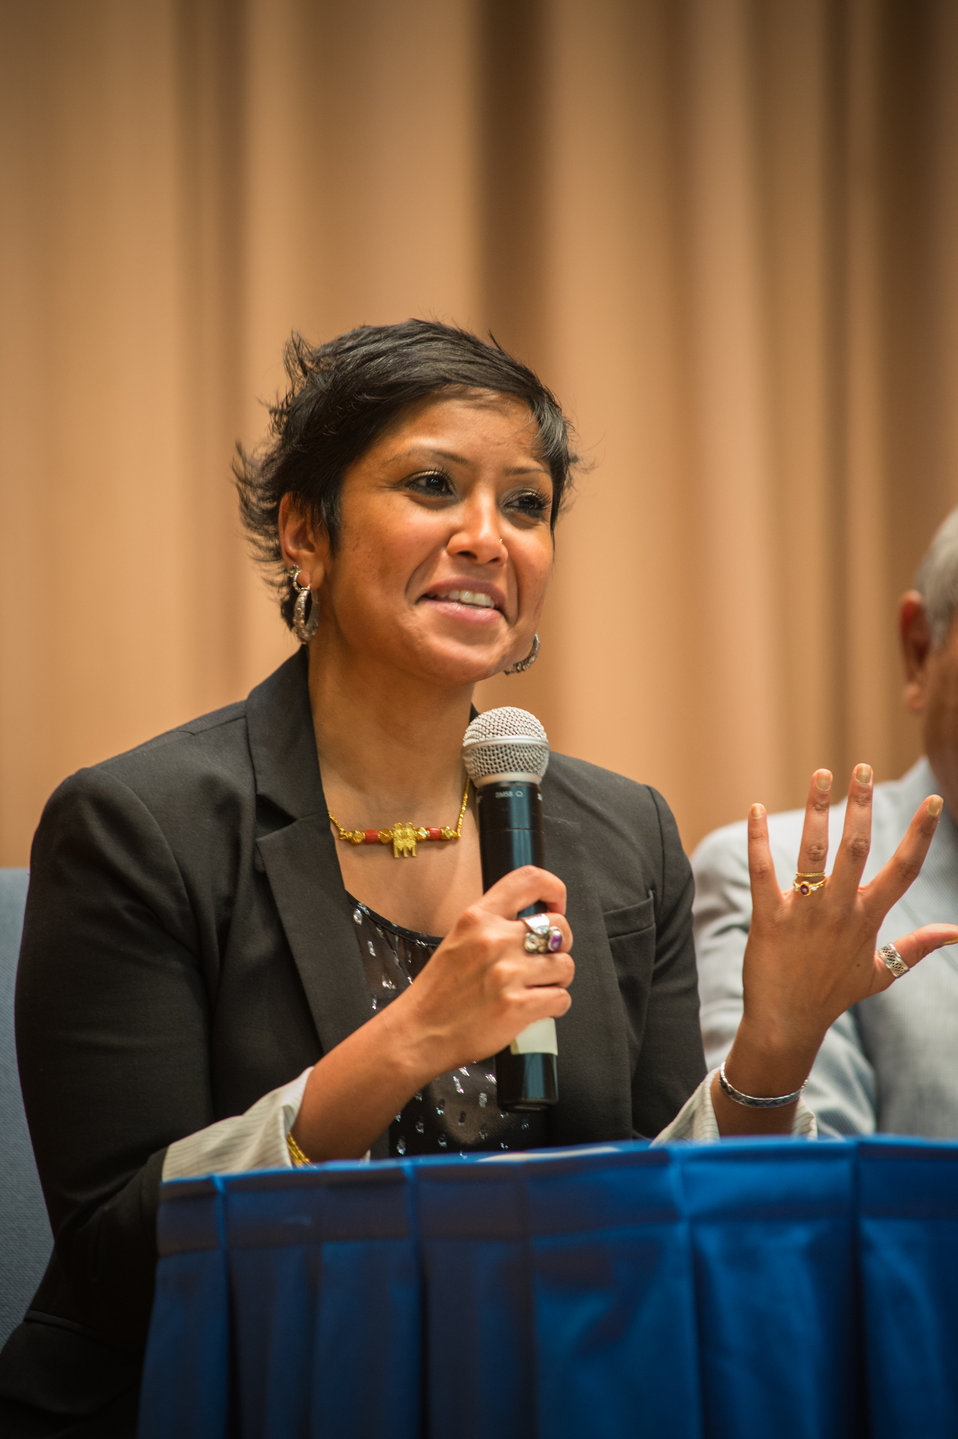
South Asian Americans Leading Together (SAALT) Executive Director Suman Raghunathan participates in a panel discussion on civil rights and leadership at the U.S. Department of Agriculture (USDA) in Washington, D.C. on Thursday, May 22, 2014. The theme of the event was, “Diverse Leadership and Expanding Opportunity: Am Imperative for America.”